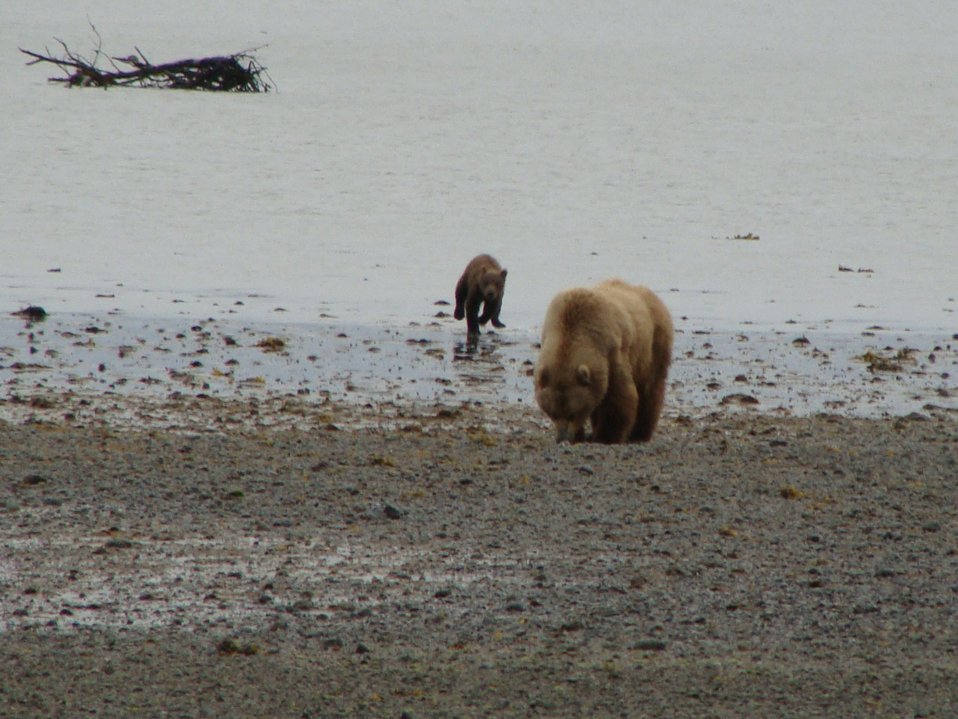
grizzly sow and cub, Izembek-Becharof National Wildlife Refuges, AK

Photo: Corey A. Anco, USFWS
2011 Wilderness Fellow